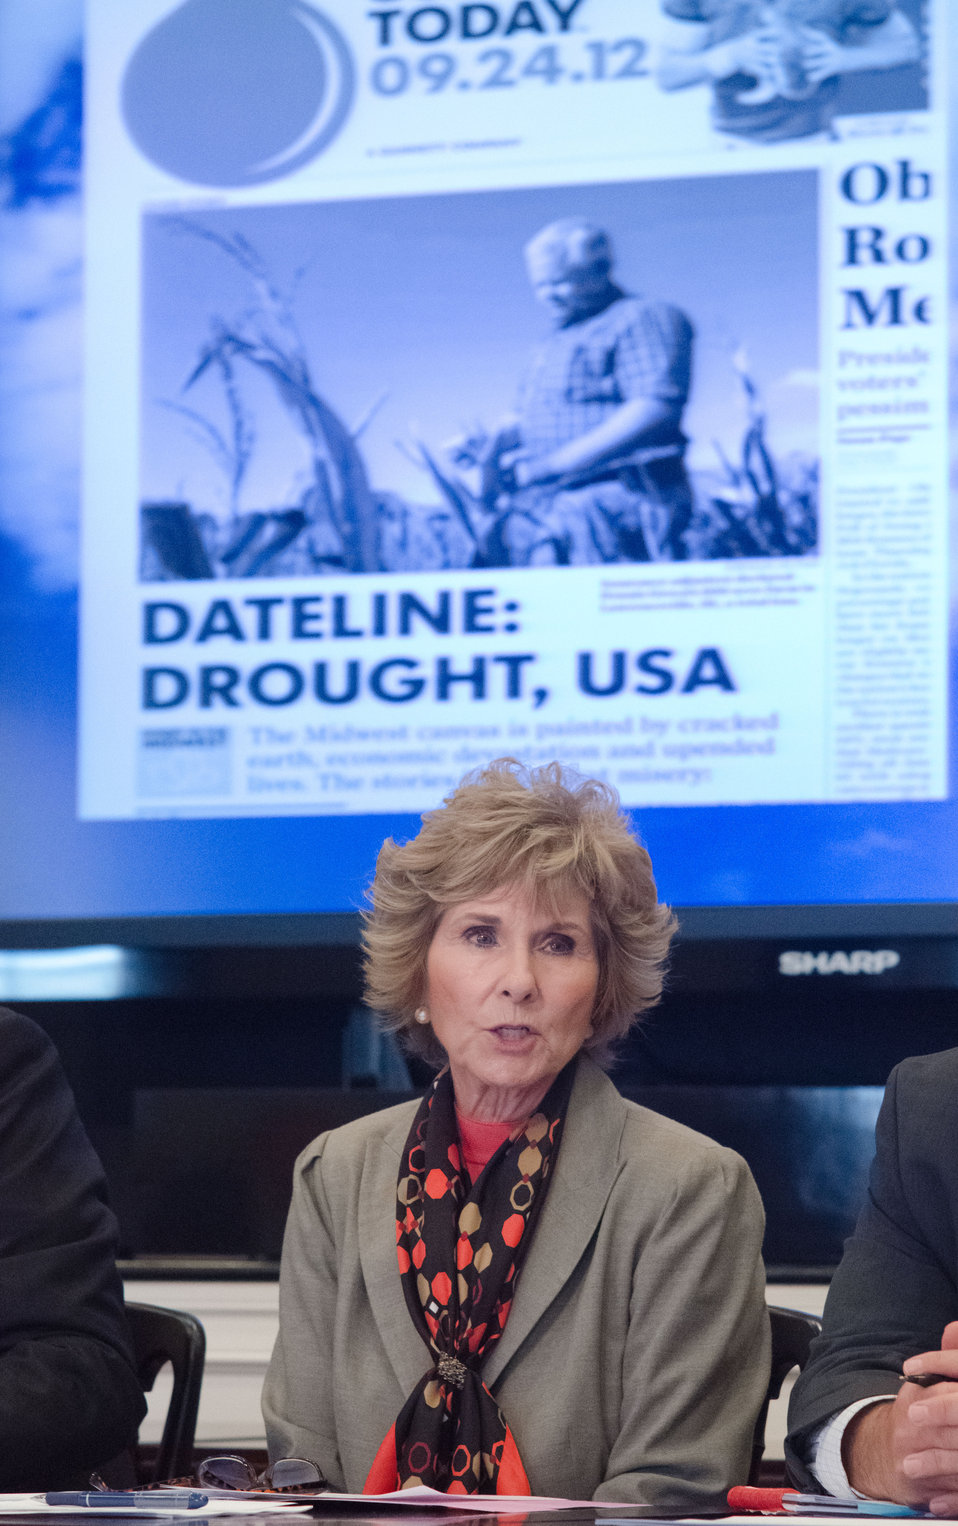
Federal Disaster Recovery Coordinator Colleen Callahan mentions that news media continues to report on the drought during her talk with the White House Rural Council chaired by Agriculture Secretary Tom Vilsack at the White House in Washington, D.C. on Friday, Oct. 5, 2012. The White House Rural Council discusses recent White House announcements and Secretary Vilsack asks council members to outline their work plan for the coming months.